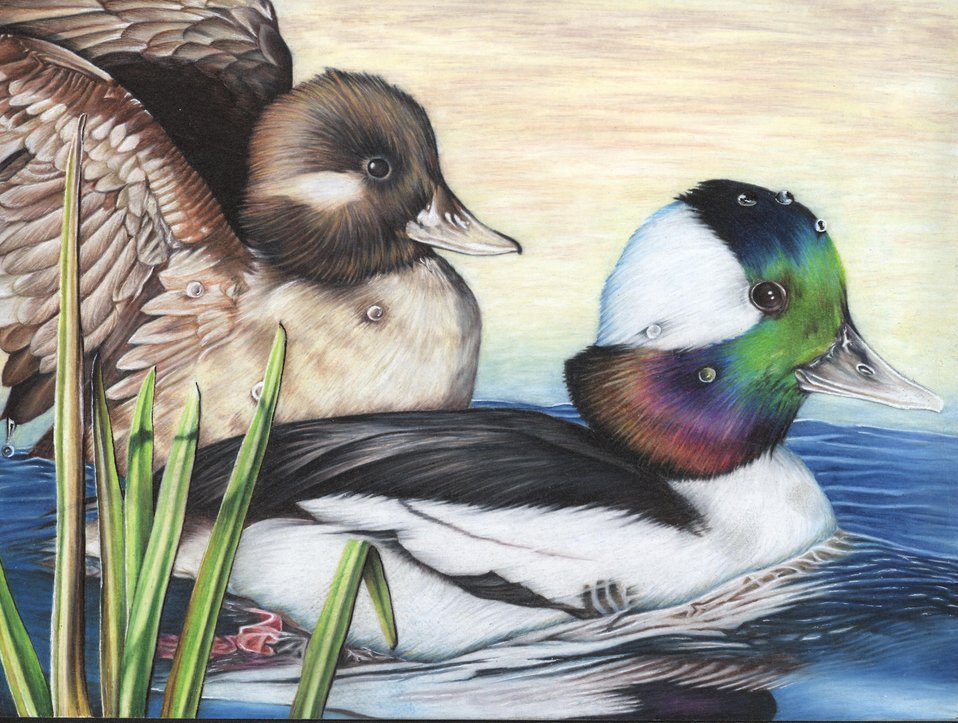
Indiana

2012 Jr Duck Stamp Program
State Best of Show
Indiana